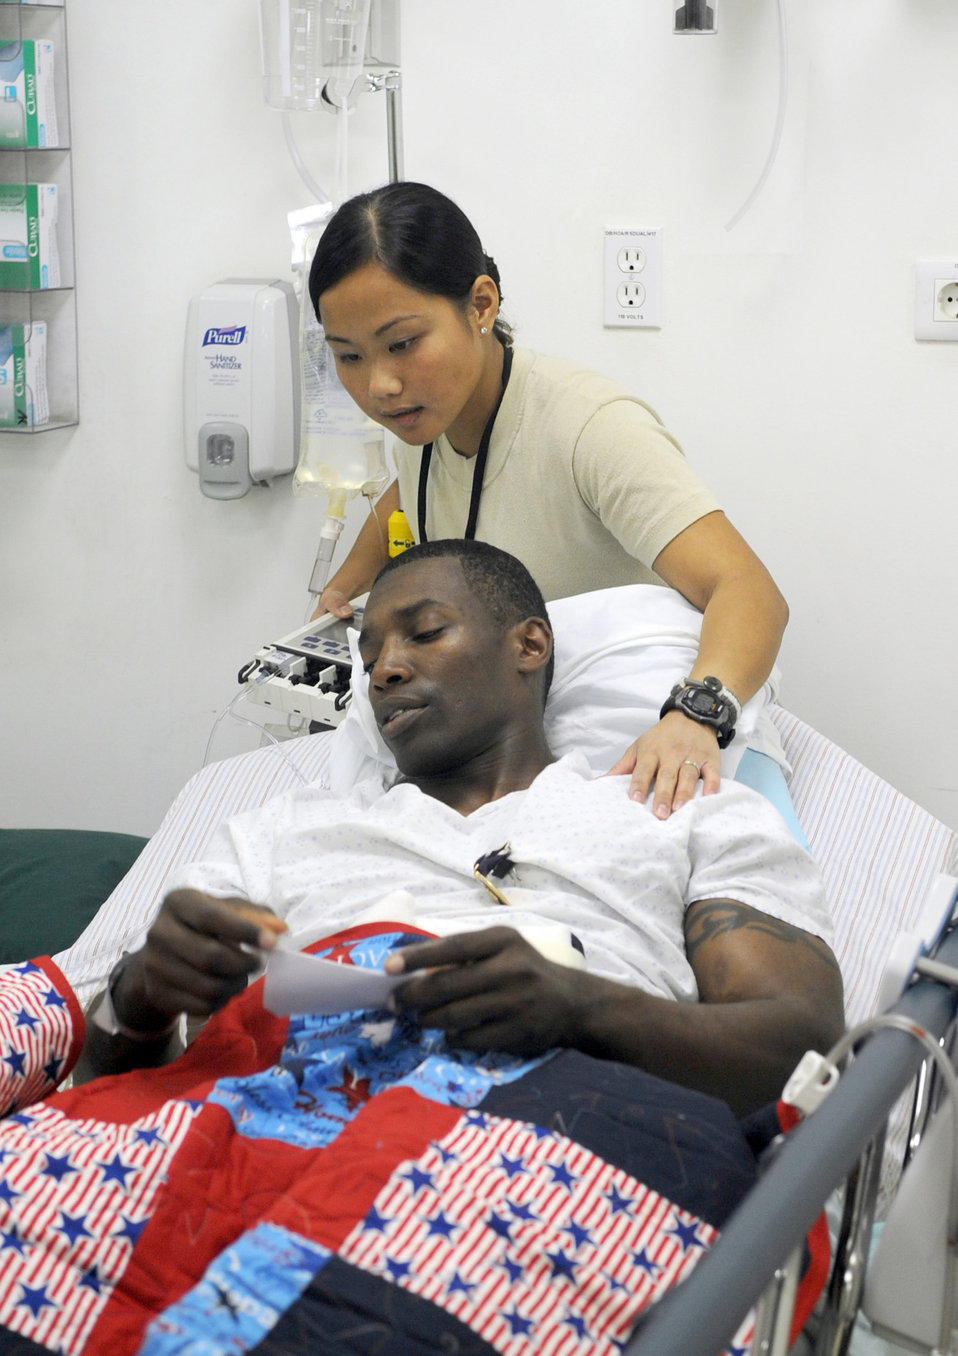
Medical Airmen integral to medal ceremony

Staff Sgt. Frances Robinson comforts Army 1st Lt. Corey Bunch Jan. 4, 2011, at Joint Base Balad, Iraq. Lieutenant Bunch was admitted to the intensive care unit here after being injured in an improvised explosive device attack near Abu Sayada, Iraq. Sergeant Robinson is a 332nd Expeditionary Medical Operations Squadron medical technician. Lieutenant Bunch is assigned to Charlie Company 1-21 Infantry Battalion.